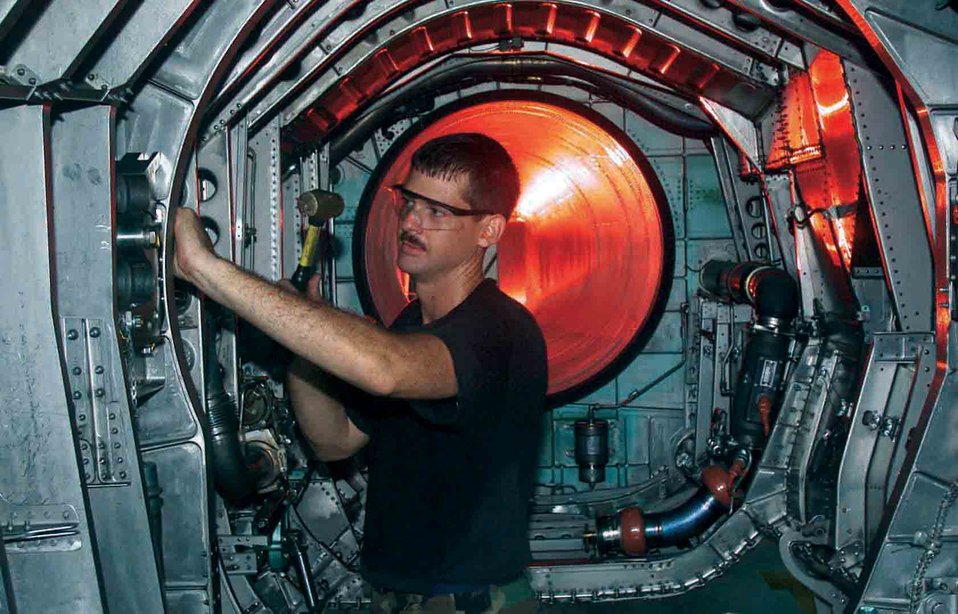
Keeping Eagles flying

EGLIN AIR FORCE BASE, Fla. -- An Airman with the 33rd Maintenance Squadron here works in an F-15 Eagle engine bay. Airmen of the 33rd MXS, along with those of the 33rd Aircraft Maintenance Squadron, specialize in accessories, aerospace ground equipment, propulsion, avionics, armaments, munitions, maintenance and fabrication to keep 54 F-15s flying year round.